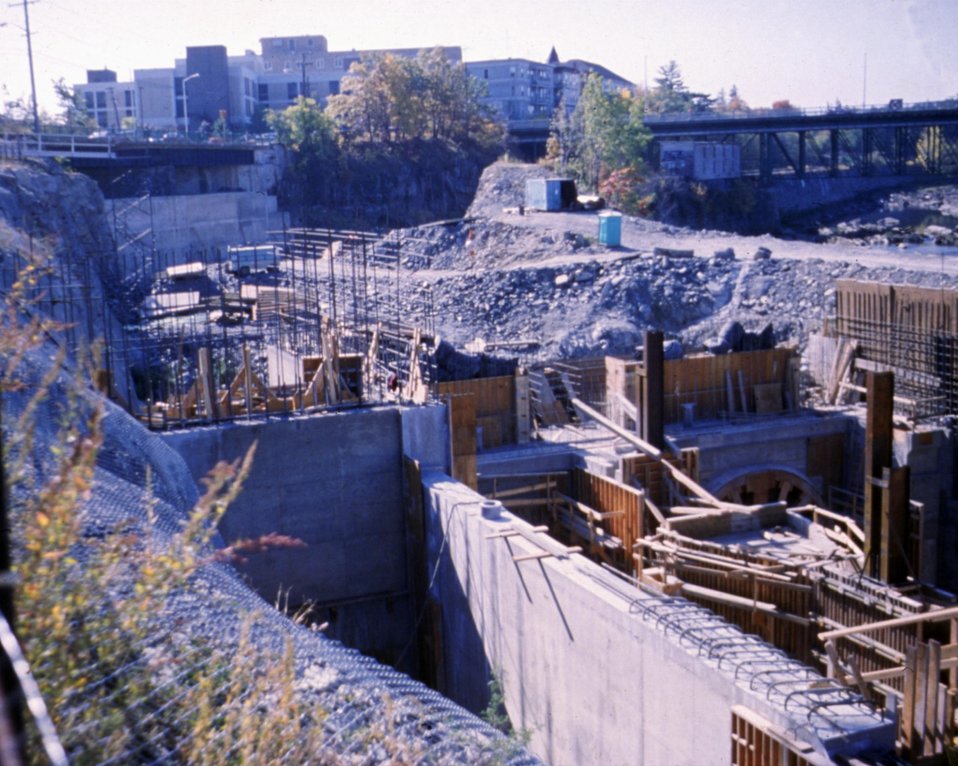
GENERAL VIEW OF POWERHOUSE CONSTRUCTION.

THE DOE SMALL-SCALE HYDROPOWER PROGRAM CONSISTS OF 19 PROJECTS AND DEMONSTRATES THE VIABILITY OF SMALL-SCALE HYDRO-POWER WITH AVAILABLE TECHNOLOGY. THE BOOT MILLS PROJECT, BEGUN IN OCTOBER, 1983, WENT ON LINE IN NOVEMBER, 1985. UTILIZING TWO KAPLAN TURBINES THAT PRODUCE A MAXIMUM OF 15,000 KILOWATTS, THE DAM PROVIDES A GROSS HEAD OF 35 FEET WITH AN ANNUAL STREAM FLOW OF 4,500 CFS.